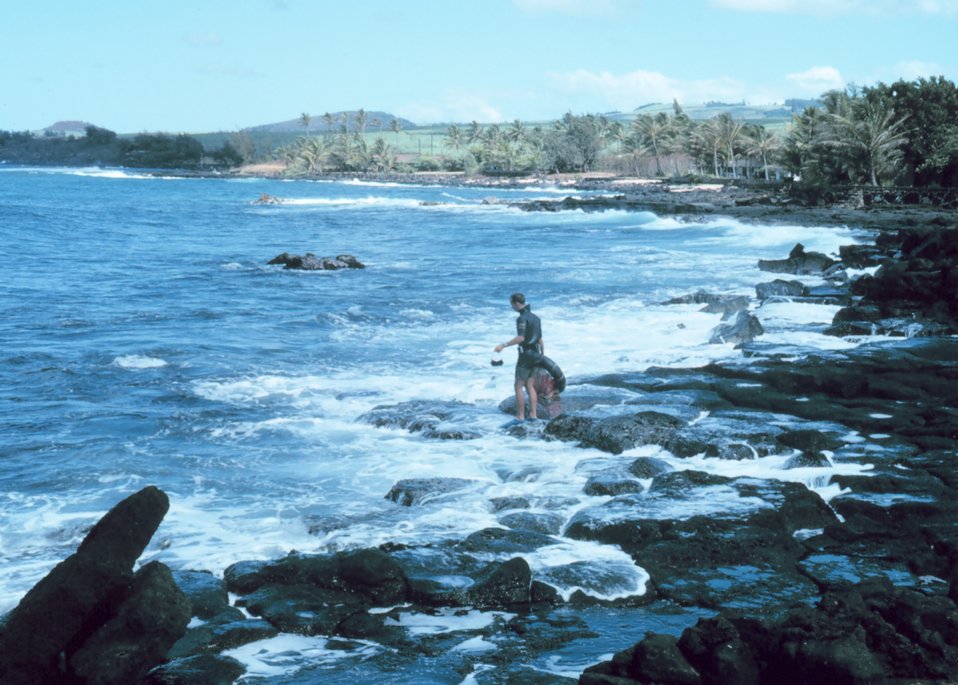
Looking for critters at Kukulula